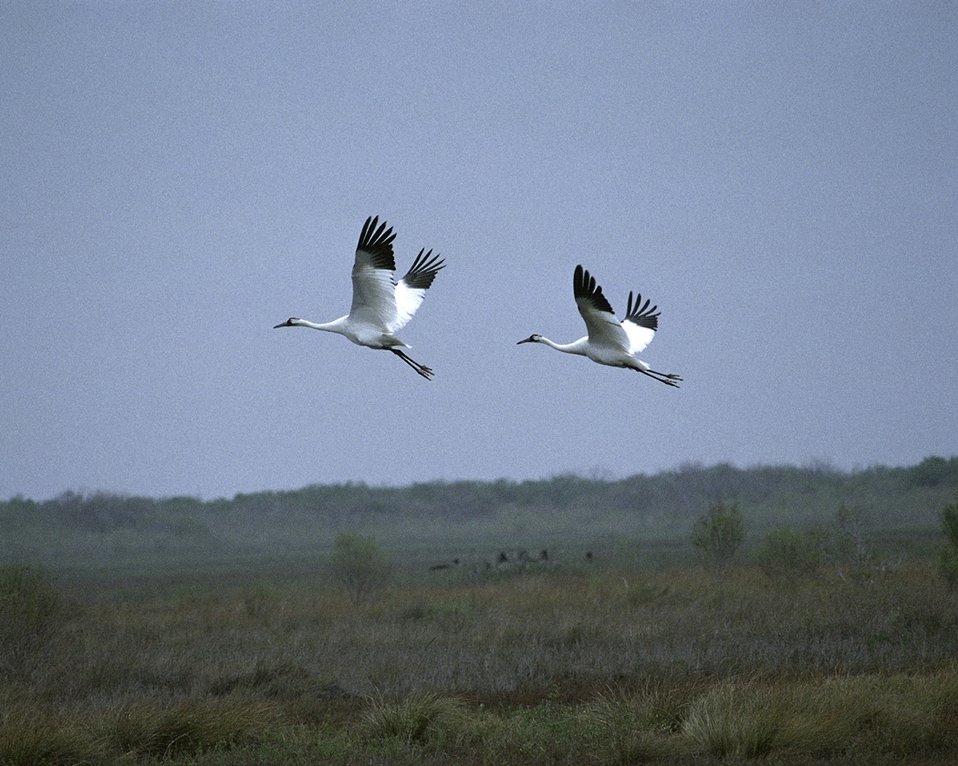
Whooping cranes over Aransas Refuge

Two whooping cranes fly across habitat studded with palmetto and prickly pear cactus at Aransas National Wildlife Refuge in Texas.